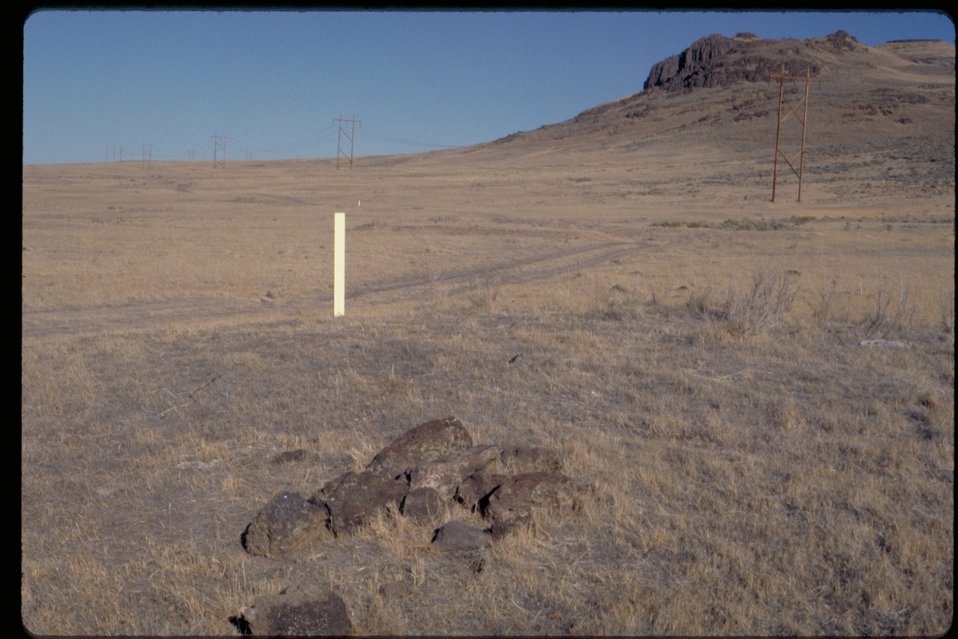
Oregon Trail Possible Grave near Teapot Dome Lower Snake River District